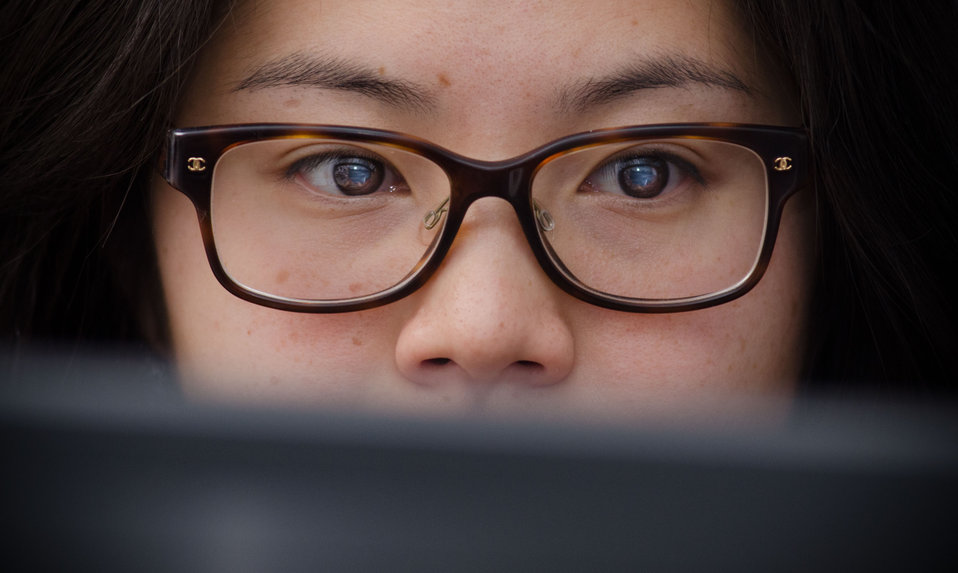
U.S. Department of Agriculture Deputy Press Secretary Stephanie Chan scans the computer screen in front of her for useful links to support people asking questions, answered by Senior Advisor to the Secretary for Environment and Climate Change Robert Bonnie (not seen) hosting a live Virtual Office Hours session on Twitter, in Washington, D.C. on Thursday, November 29, 2012. Online questions about U.S. Department of Agriculture's (USDA) record on conservation achievements and efforts to reconnect Americans to the great outdoors were answered during the event. Questions were submitted live and in advance to the @USDA Twitter account using the hashtag #AskUSDA.